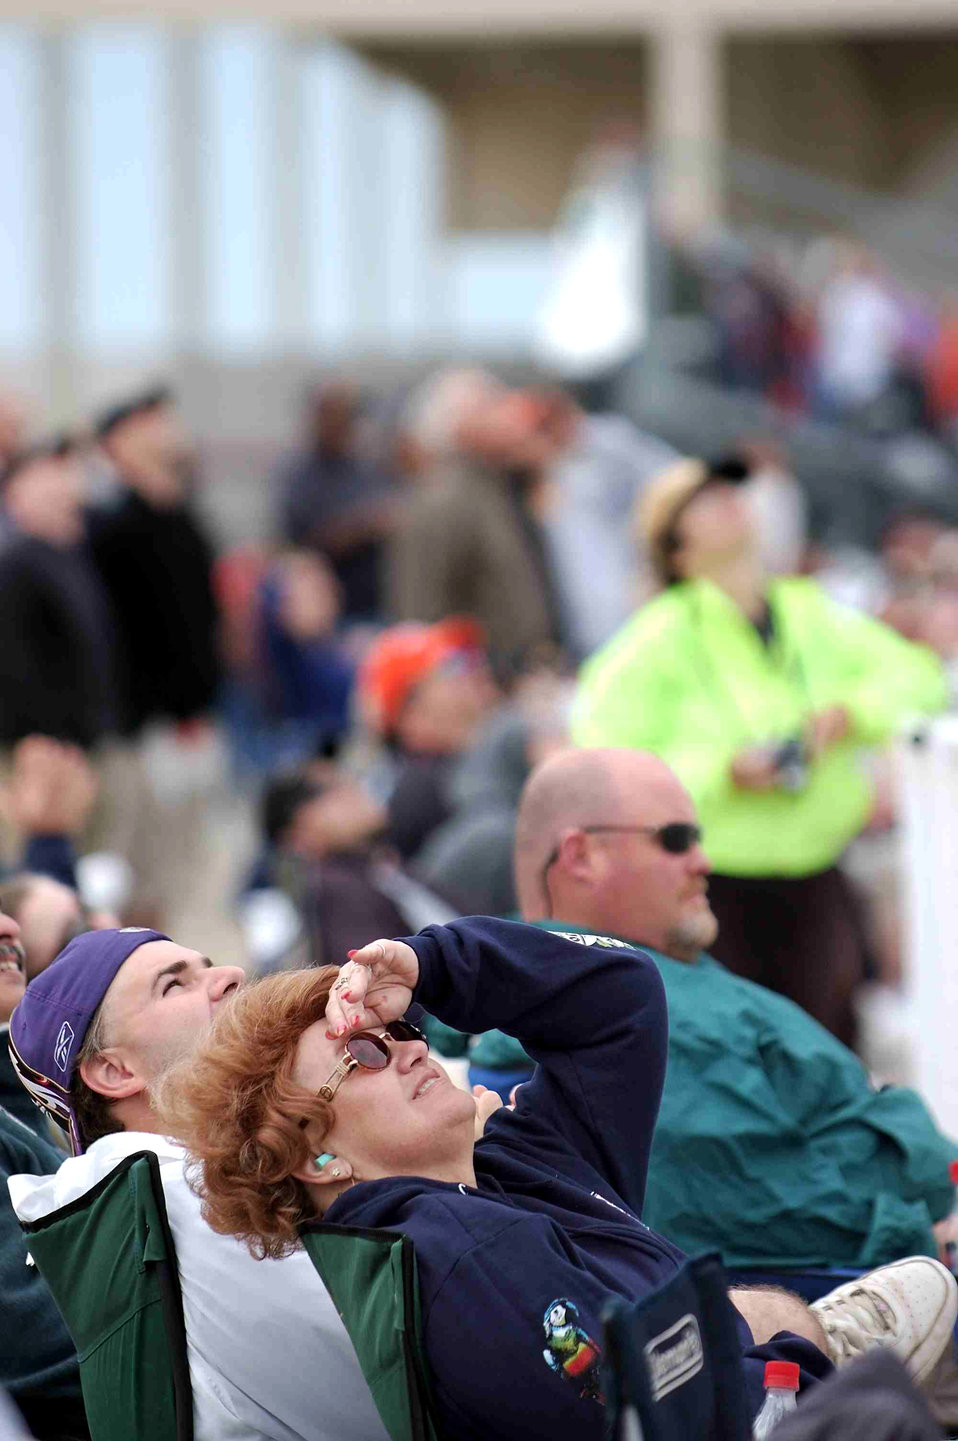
Air Power Over Hampton Roads Air Show 2006

Thousands of military and civilian aircraft enthusiasts marvel at the aerial feats at the Air Power over Hampton Roads Air Show at Langley Air Force Base, Va., on Sunday, May 7, 2006.